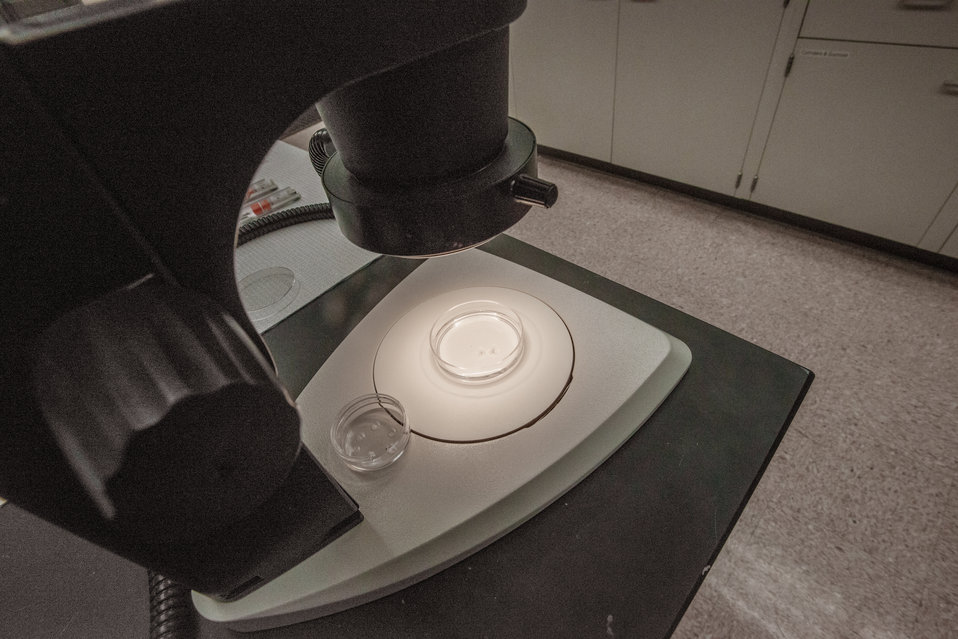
Microscopic examination of plant tissues is done in the Population, Genetics and Genomics laboratory, at the U.S. Department of Agriculture's (USDA) Agriculture Research Service (ARS) National Center for Genetic Resources Preservation (NCGRP) in Ft. Collins, CO on Wednesday, Nov. 6, 2013. NCGRP is the largest agricultural gene bank facility in the U.S. The NCGRP staff conducts groundbreaking research to develop more efficient and effective means for preserving plant and animal germplasm, and for better understanding the genetic structure of these invaluable materials. The research findings, preservation techniques, and specialized technology developed by the NCGRP have been adopted by gene banks around the world: many international scientists travel to the NCGRP for research and training.